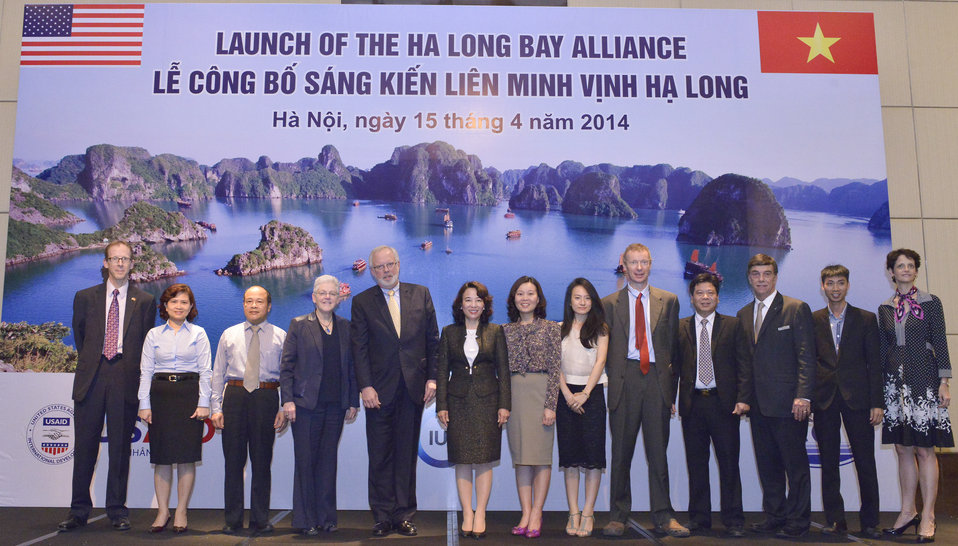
Launching of Ha Long Bay Alliance

Hanoi, April 15, 2014.